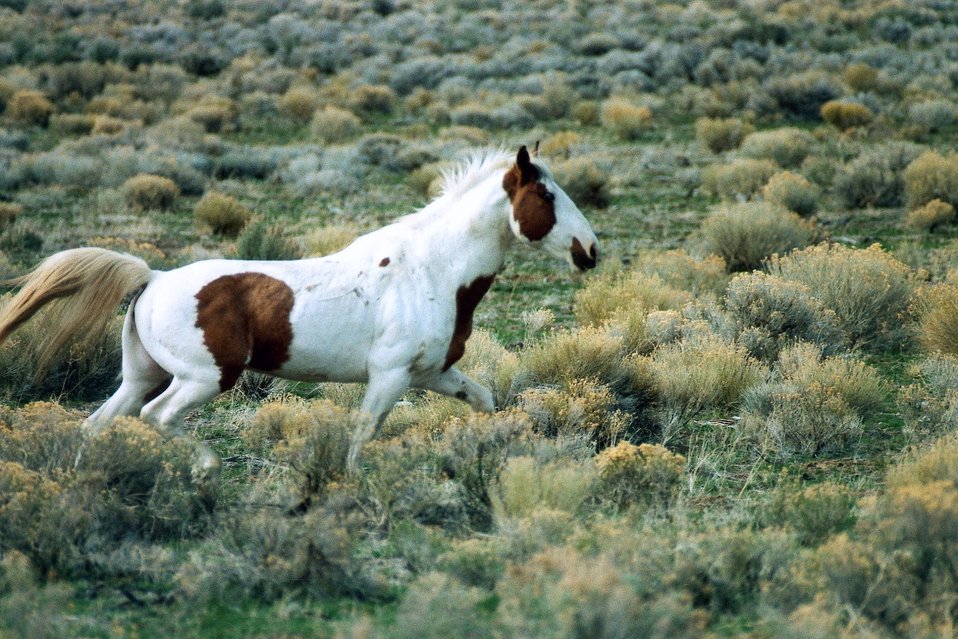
Medium shot of (alpha male) stallion.